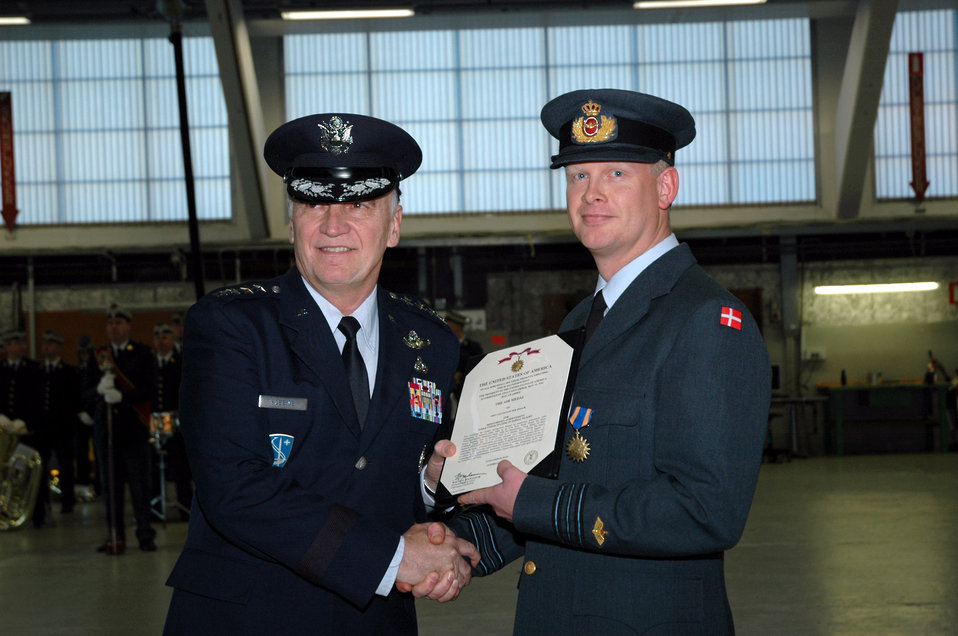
USAFE commander awards Air Medals to Danish pilots

Gen. William T. Hobbins (left) presents a U.S. Air Medal to Capt. Per Zesach Jan. 2 at Fighter Wing Skrydstrup, Denmark. The general presented 35 Air Medals to Danish fighter pilots recognizing their achievement while operating under the 376th Air Expeditionary Operations Group at Manas Air Base, Kyrgyzstan. General Hobbins is the U.S. Air Forces in Europe commander. Captain Zesach is a Danish F-16 pilot who flew 27 combat missions in support of Operation Enduring Freedom from October 2002 to October 2003.